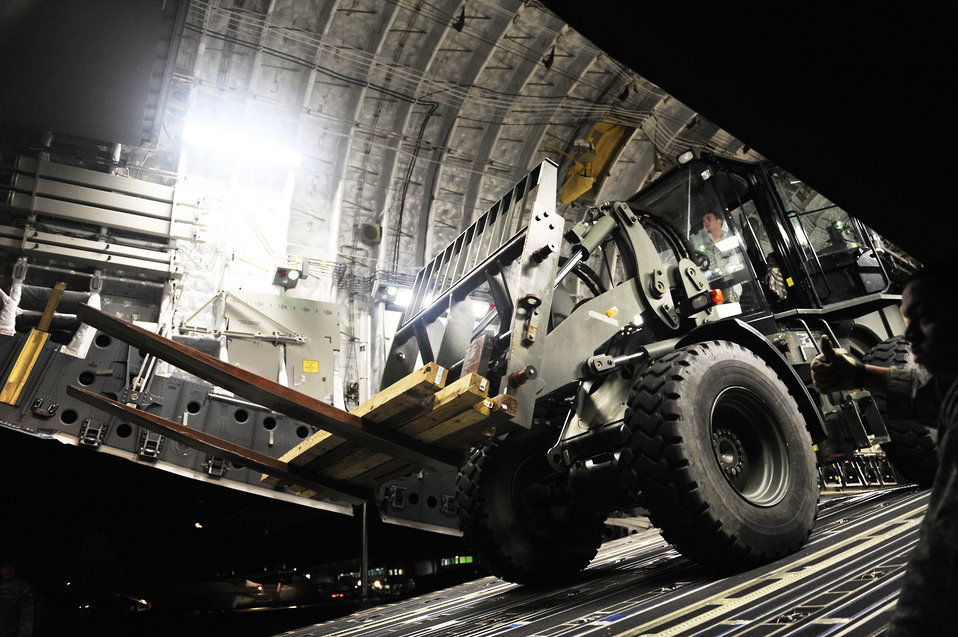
Haiti Relief Operations

An Airman from the 621st Contingency Response Wing at Joint Base McGuire-Dix-Lakehurst, N.J., unloads cargo from a C-17 Globemaster III, Jan. 15, 2010, at the airport in Port-au-Prince to support relief efforts for Haiti in the aftermath of the devastating earthquake.